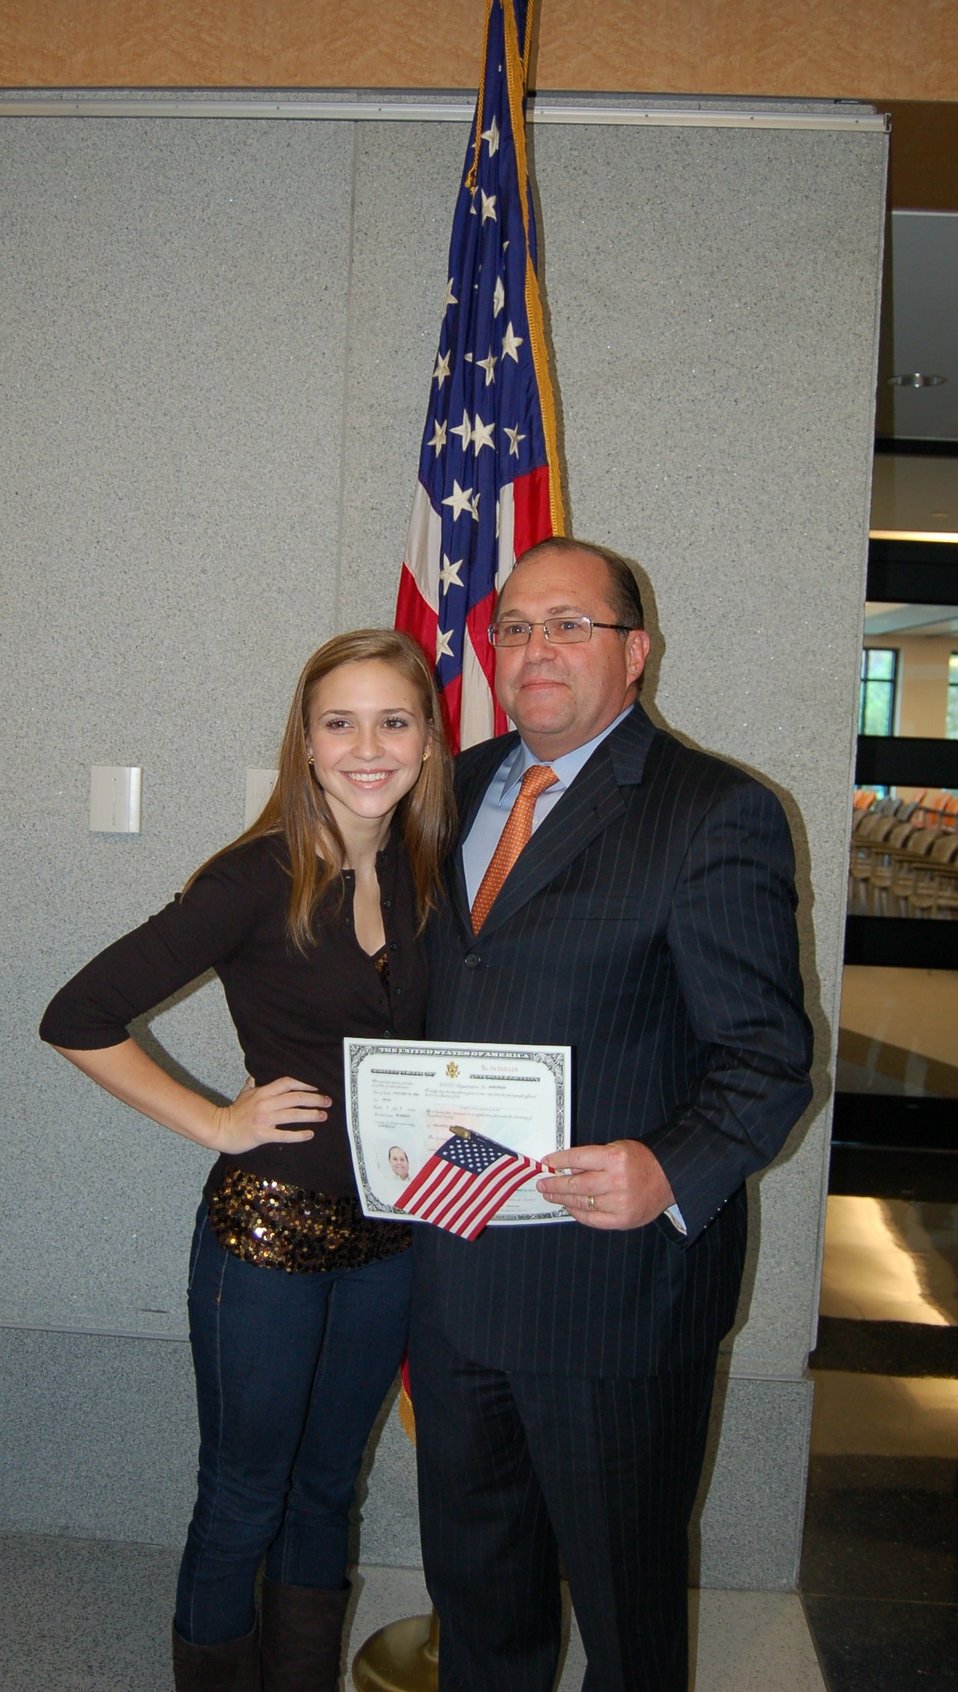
New Citizens